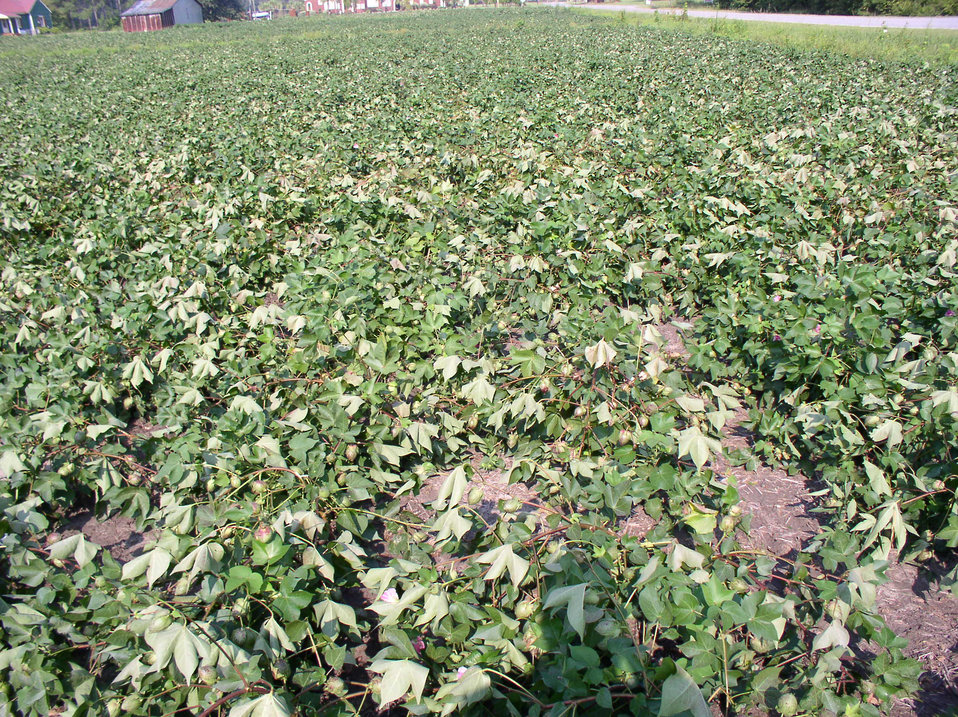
Crop damage to cotton fields from Hurricane Irene in Wayne County, NC, on Monday, August 29, 2011.